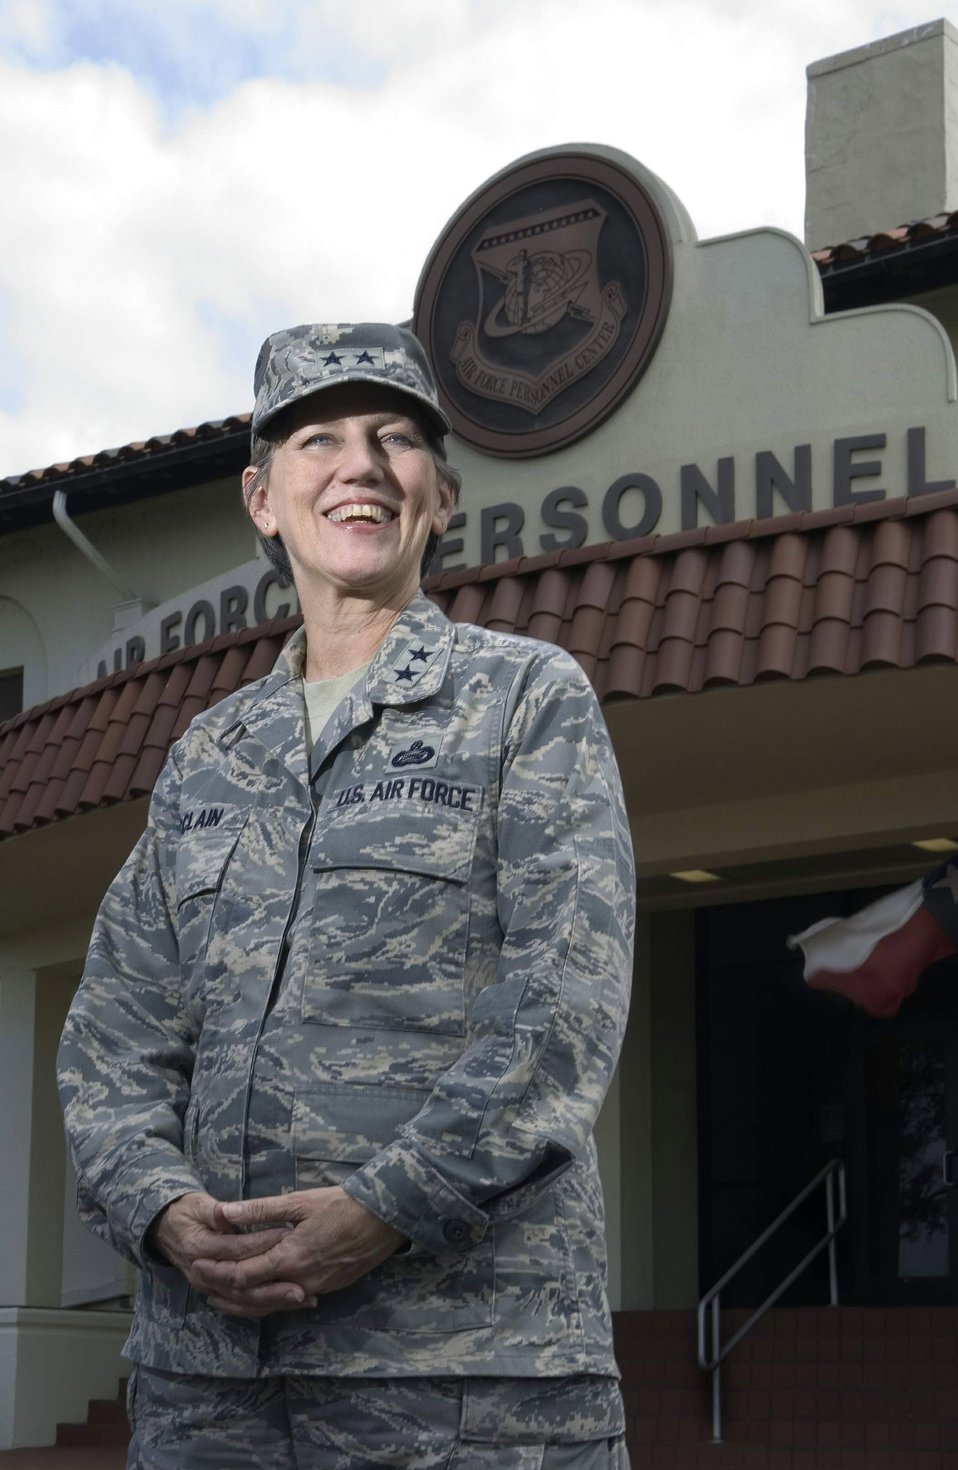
AFPC general talks about woman in the military

Maj. Gen. K.C. McClain stands in front of the Air Force Personnel Center March 18 at Randolph Air Force Base, Texas. The general is AFPC's 23rd commander and a 30-year-career Airman. AFPC members are responsible for developing personnel programs, implementing personnel policies and conducting personnel operations for 1.25 million Air Force military, civilian and retirees worldwide. The unit has 2,200 members.